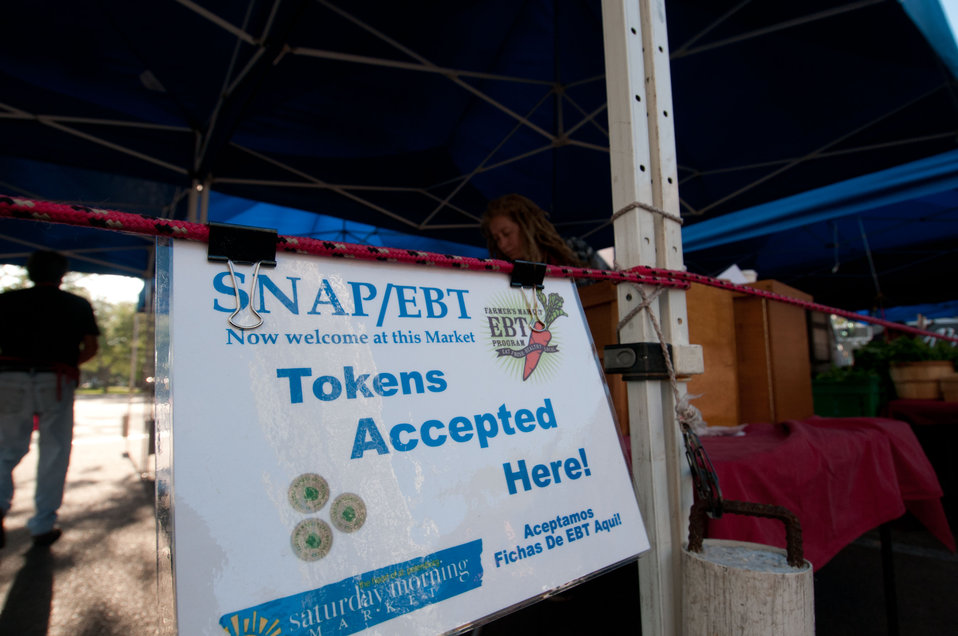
Worden Farm (www.wordenfarm.com) says, “We at Worden Farm are happy to work with the USDA SNAP (Supplemental Nutrition Assistance Program)…,” by using the market tokens from the Saturday Morning Market, in St. Petersburg, FL on April 14, 2012. At this market, SNAP benefit recipients use their Electronic Benefits Transfer (EBT) card to withdraw the dollar amount in token, in a similar way, a debit card is used. The tokens are exchanged with vendors for food, food producing plants or seeds for food producing plants as wanted and available. Tokens are then returned to the market organizer for an equal dollar amount that is electronically deposited into the vendor’s bank account. Worden Farm is a family farm that provides certified organic produce to Southwest Florida through community supported agriculture (CSA) membership programs and retail sale at several farmer’s (community) markets. Depending on the state, EBT cards can also hold value from other food and nutrition partners that can add a certain value or provide a certain degree of match to the value of other programs add to the card.